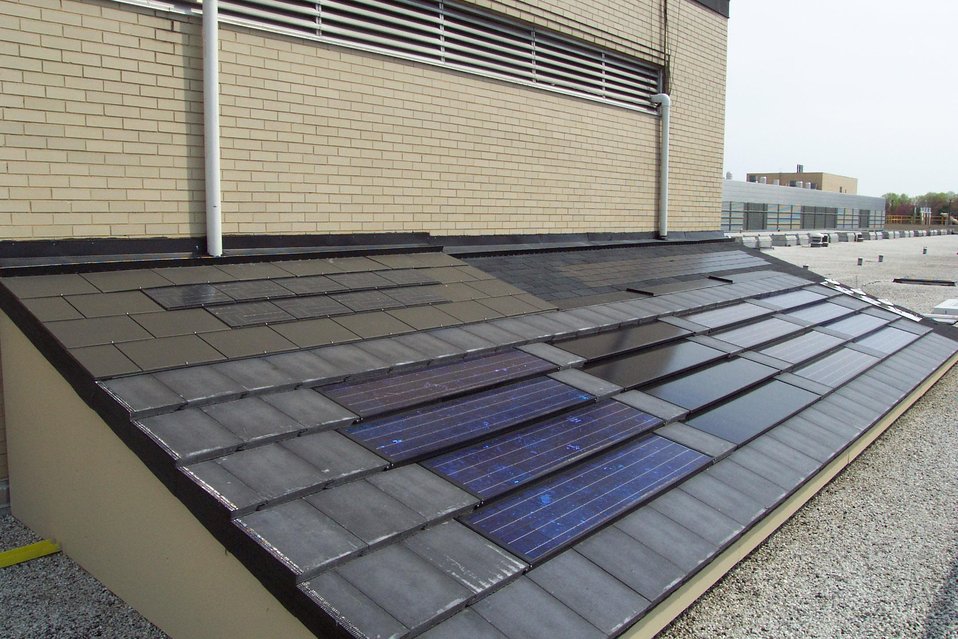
Roof Photovoltaic Test Facility

NIST's new Roof Photovoltaic Test Facility duplicates real-life conditions to monitor photovoltaic (PV) systems blended into concrete tile, slate and asphalt shingle roofs. Data from PV embedded systems and other framed PV roof modules systems will be used to validate or improve energy prediction models.